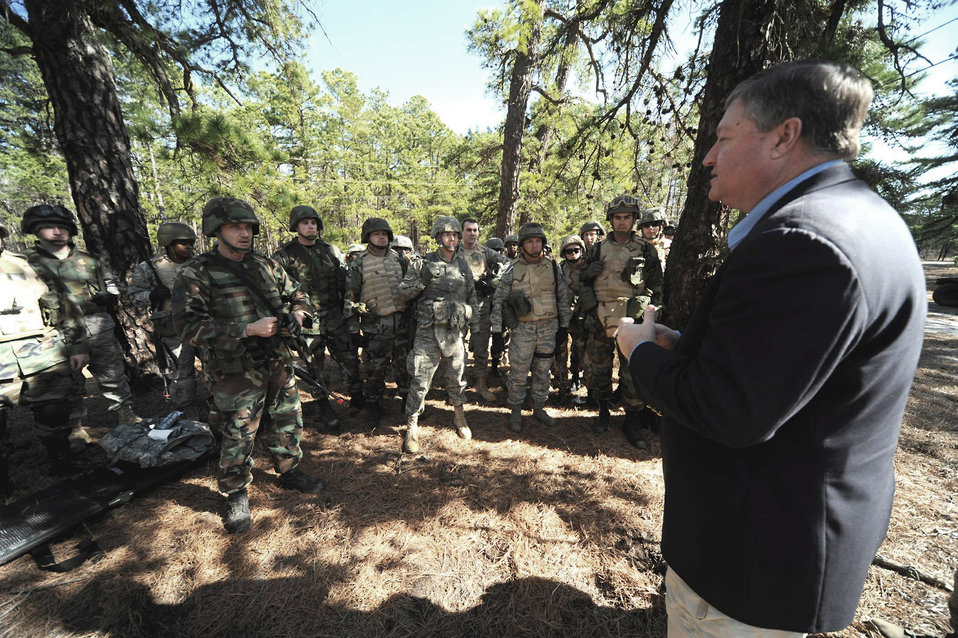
SECAF visits USAFEC

Secretary of the Air Force Michael Donley chats with Airmen in deployment training status March 31 during a visit to the U.S. Air Force Expeditionary Center on Fort Dix, N.J. Secretary Donley was visiting the Expeditionary Center was to see its facilities and training venues. Besides Fort Dix, he also visited neighboring McGuire Air Force Base and Naval Air Engineering Station Lakehurst to learn more about the Joint-Basing Initiative.